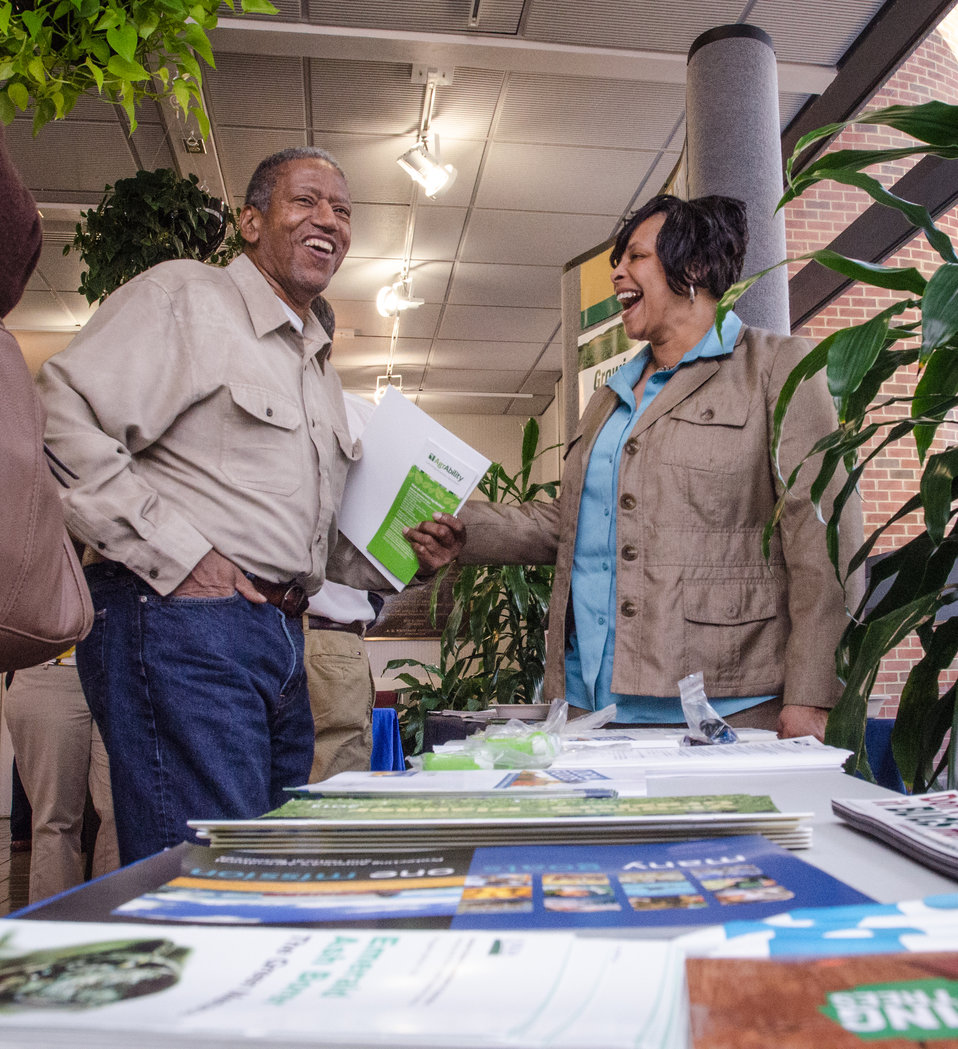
Staffers and farmers came together for the “Virginia State University (VSU), U.S. Department of Agriculture (USDA) and Virginia Farmers Working Together” outreach workshop in the VSU, L. Douglas Wilder building on Thursday, March 7, 2013, in Petersburg, VA. Farmers shared and learned new ways to do more with USDA services, and how to apply for programs that will help grow their business.